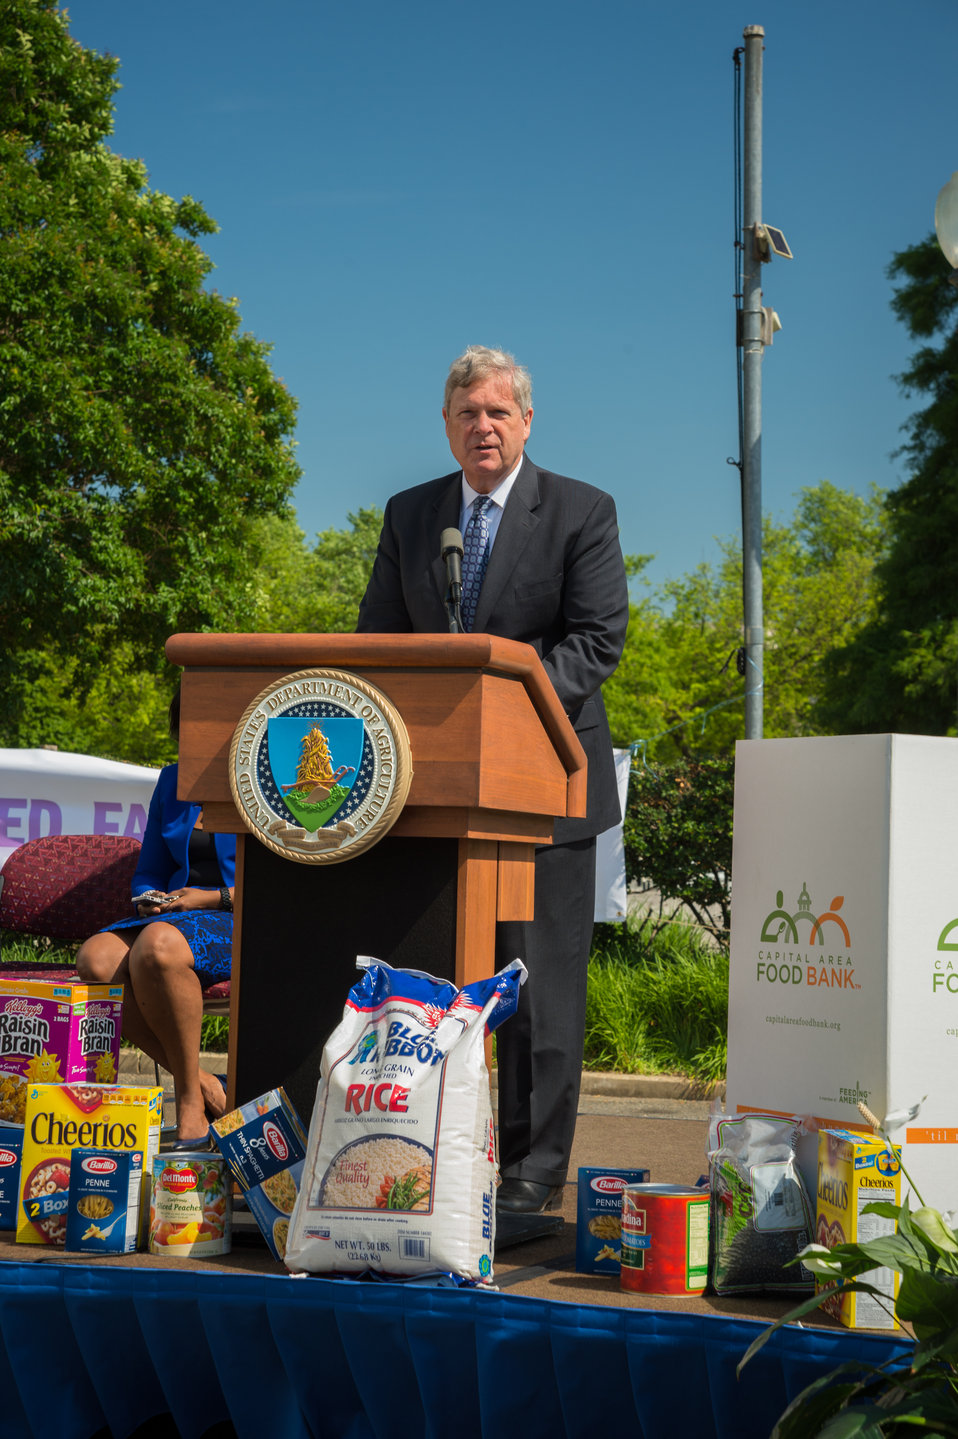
Agriculture Secretary Tom Vilsack announced the 2014 National Feds Feed Families Kick-Off at the United States Department of Agriculture’s (USDA) People’s Garden in Washington, DC, Mon. Jun. 2, 2014. The theme of this year’s event is, “Help Knock Out Hunger.” The USDA will lead the campaign with the support of the Chief, Human Capital Officers Council and other agency partners, which officially begins on June 1 and will run through August 27, 2014.USDA Photo by Bob Nichols.